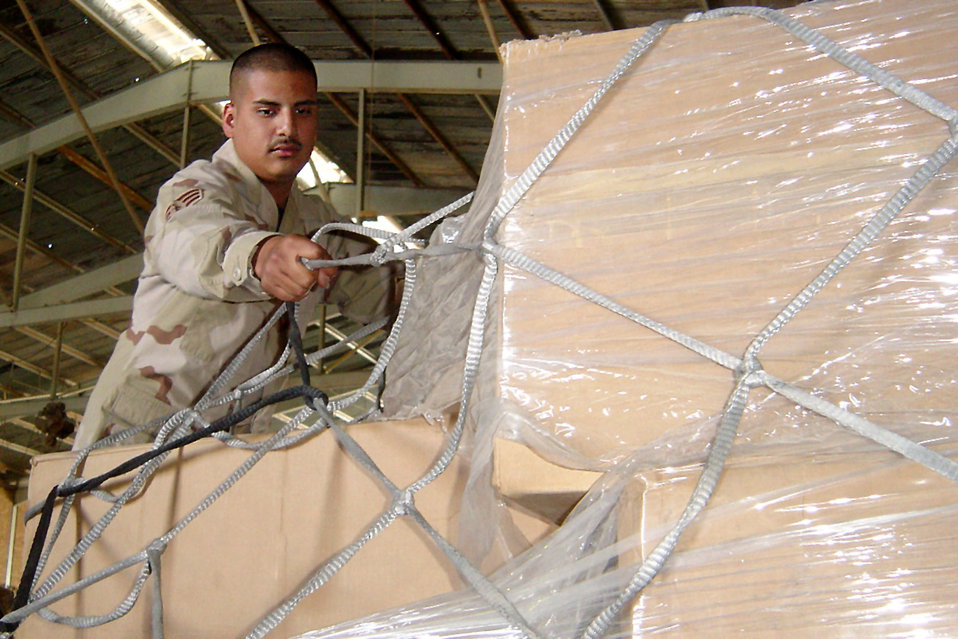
Demands of supply

KIRKUK AIR BASE, Iraq -- Senior Airman Cesar Campos removes the netting from a cargo shipment in the supply warehouse here. Campos is assigned to the 506th Expeditionary Logistics Readiness Squadron supporting Operation Iraqi Freedom.